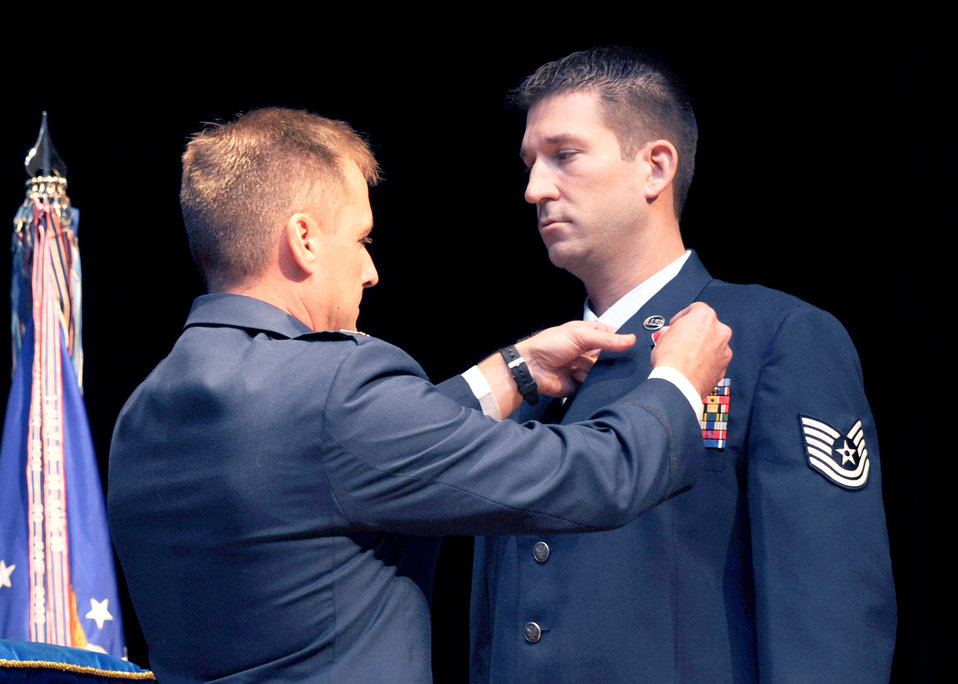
Charleston Airman receives Bronze Star with Valor

Tech. Sgt. Michael Williams is awarded the Bronze Star Medal with Valor by Col. John Wood Oct. 15, 2009 at Charleston Air Force Base, S.C. The Bronze Star is awarded to servicemembers for bravery, acts of merit or meritorious service and may be awarded with valor for courage under fire. Sergeant Williams is an explosive ordnance technician with the 437th Civil Engineer Squadron and Colonel Wood is the 437th Airlift Wing commander.